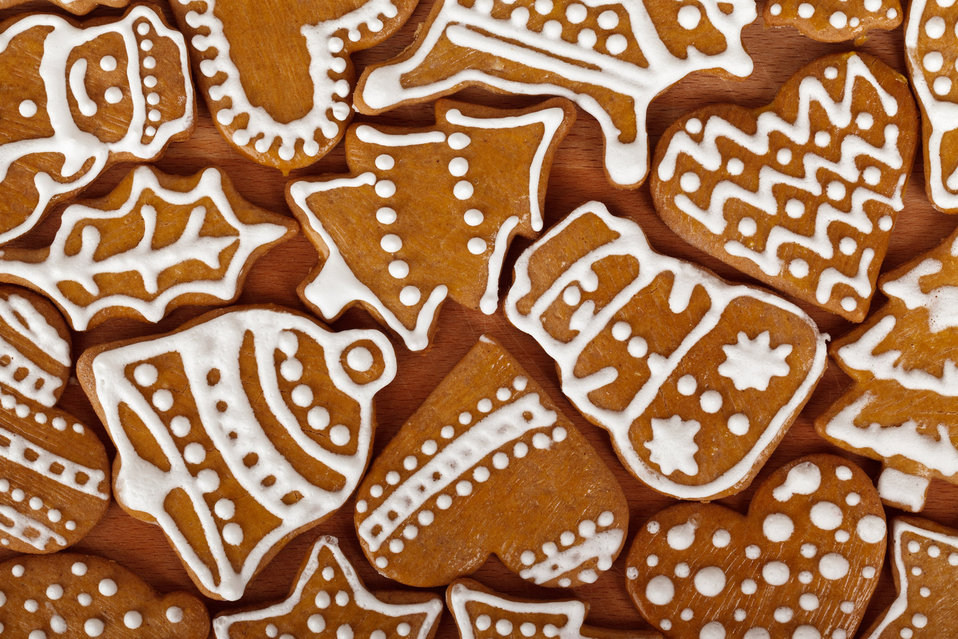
Christmas gingerbread shapes pattern.